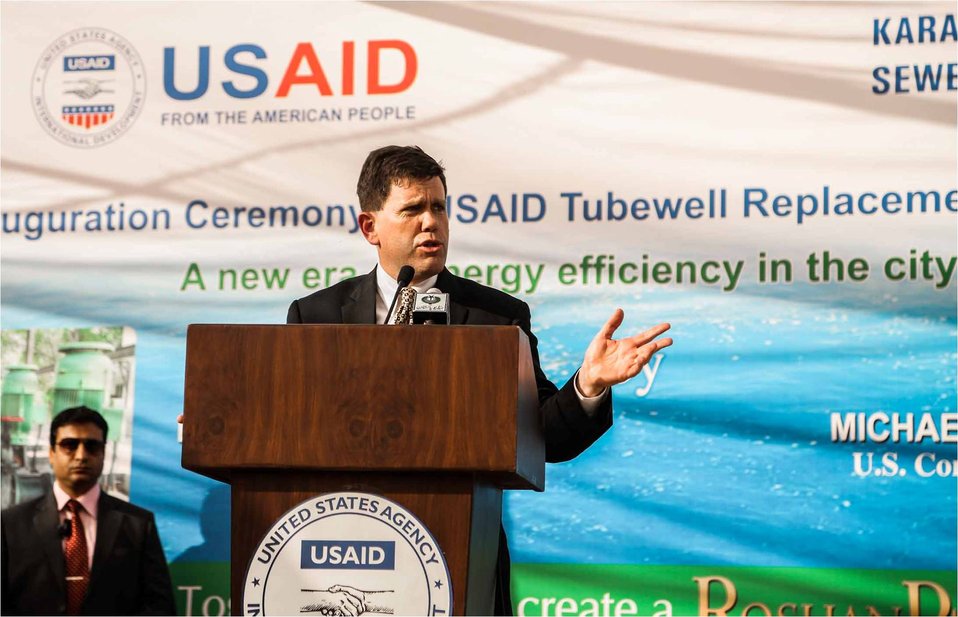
US Consul General Michael Dodman addressing the audience.